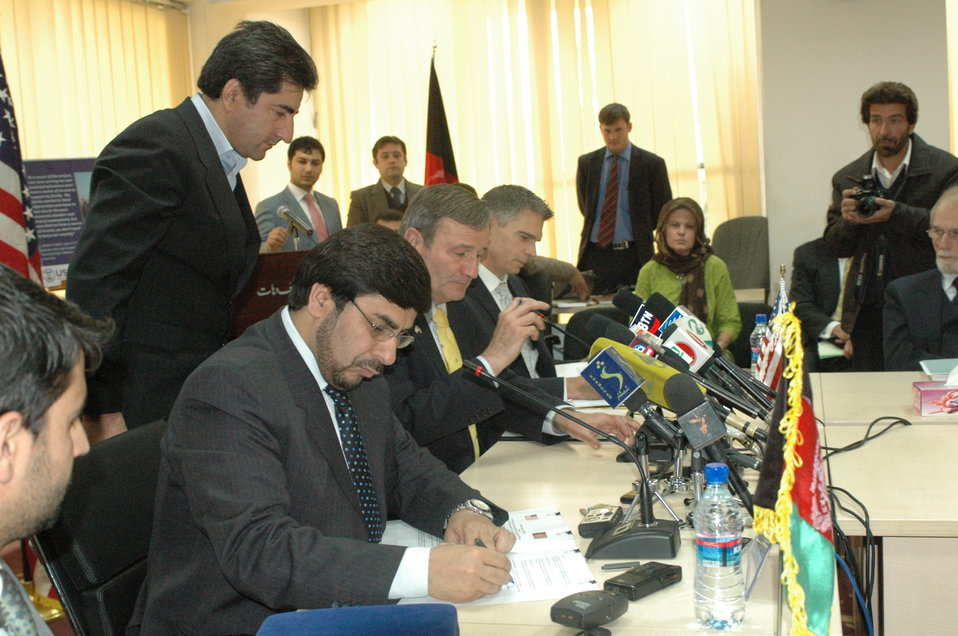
Community Based Stabilization Grants Ceremony, December 7, 2010